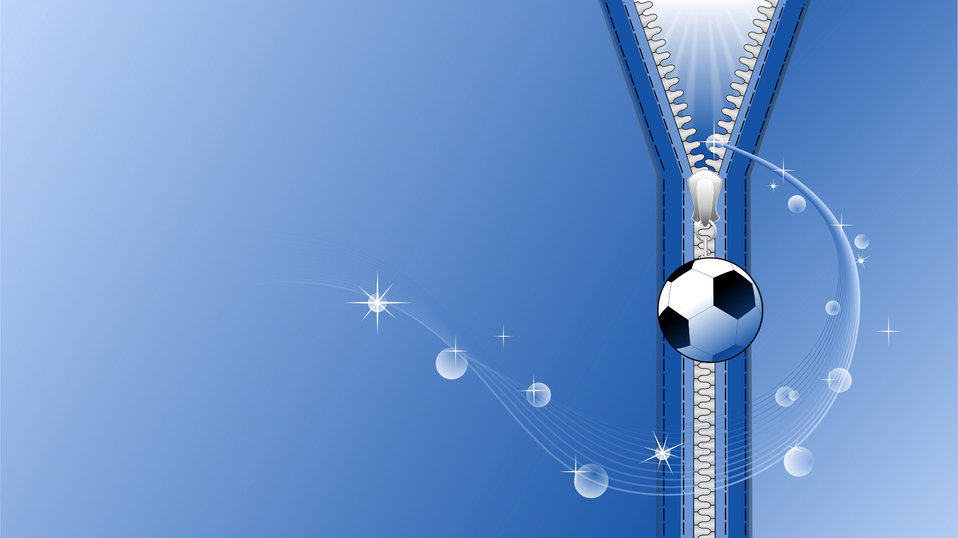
Background with a soccer ball

Abstract wallpaper with a football.